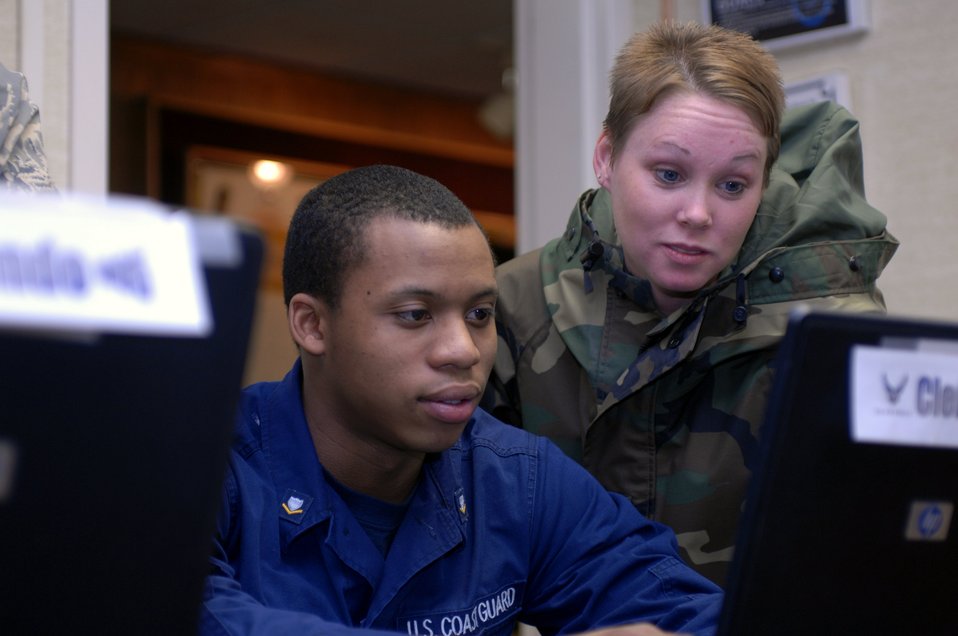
PME classrooms open for sister service

Coast Guard Petty Officer 3rd Class Perry Clement and Senior Airman Emily Burgess, Airman Leadership School students, look at some of the curriculum at the Elmendorf Professional Military Education Center Nov. 29. Petty Officer Clement is a machinery technician for District 17.